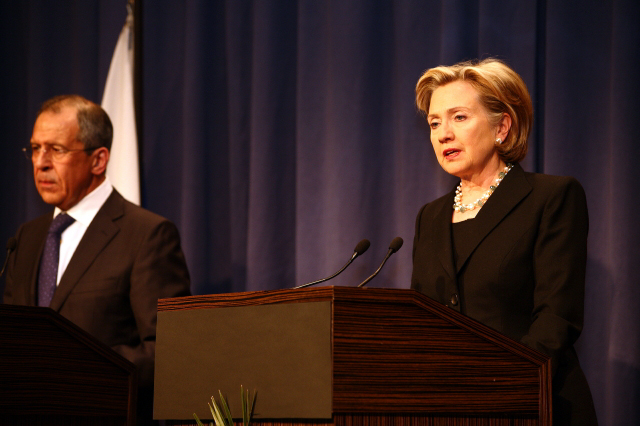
Press Conference With Russian Foreign Minister

Press conference after dinner meeting between U.S. Secretary of State Hillary Rodham Clinton and Russian Foreign Minister Sergey Lavrov in Geneva, Switzerland March 6, 2009.